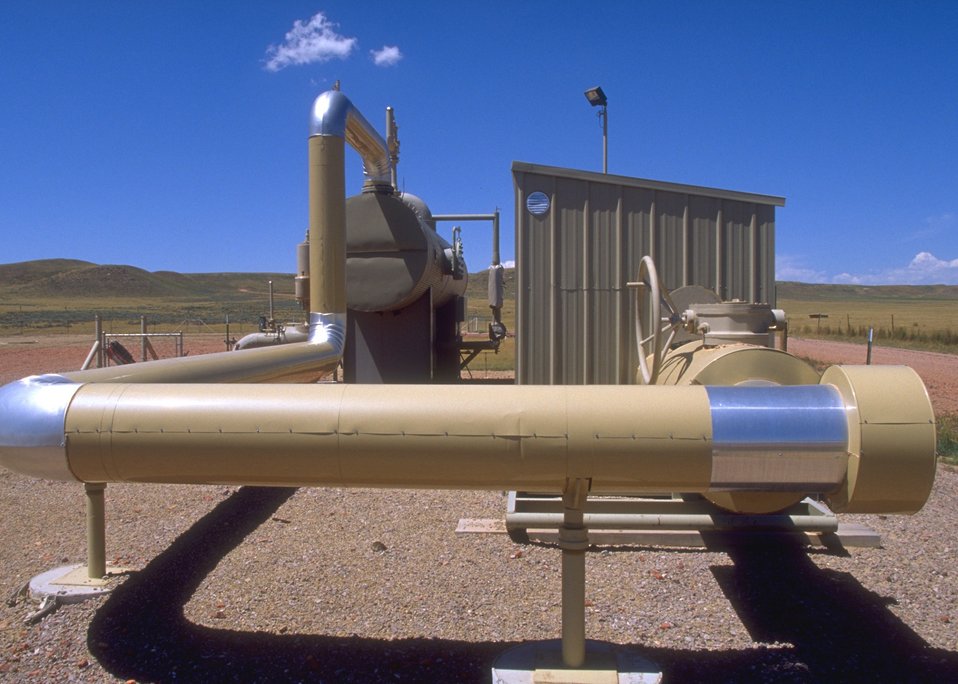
Facilities used in the production of coal bed methane, Buffalo Field Office.